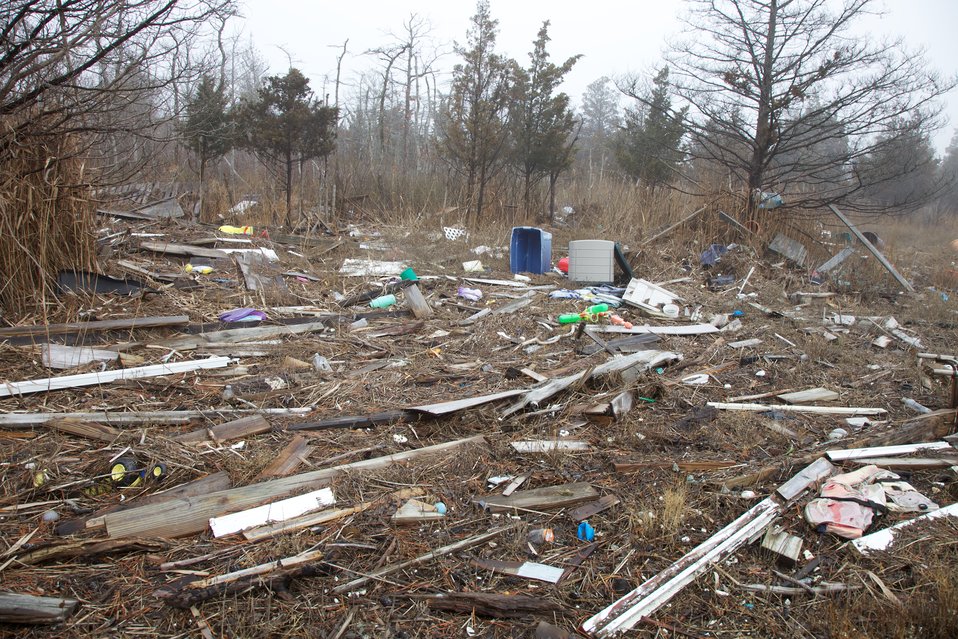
Forsythe NWR debris cleanup

Post-Sandy debris at E.B. Forsythe National Wildlife Refuge.